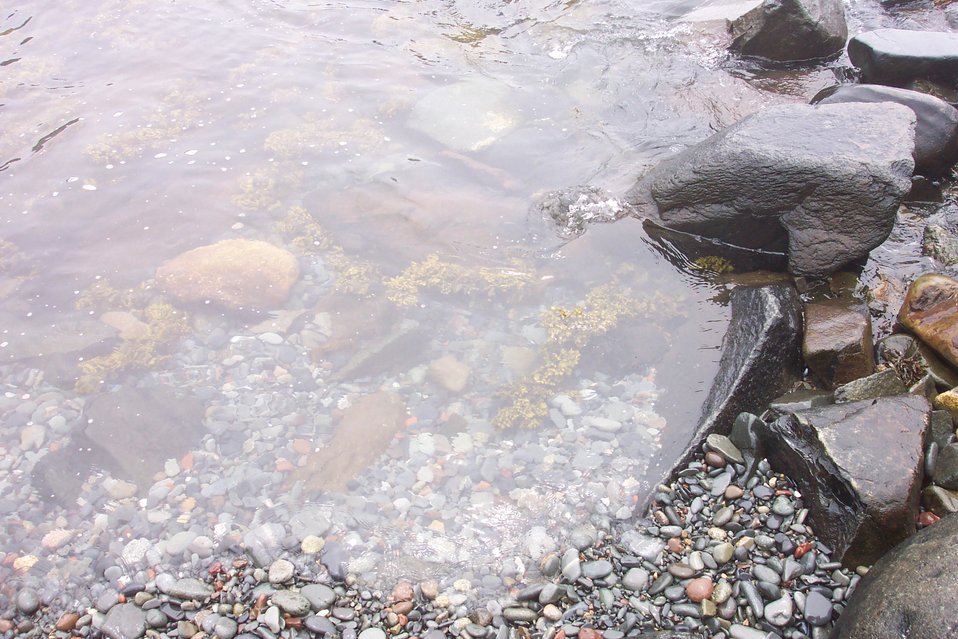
Looking into a tide pool at West Quoddy Head.